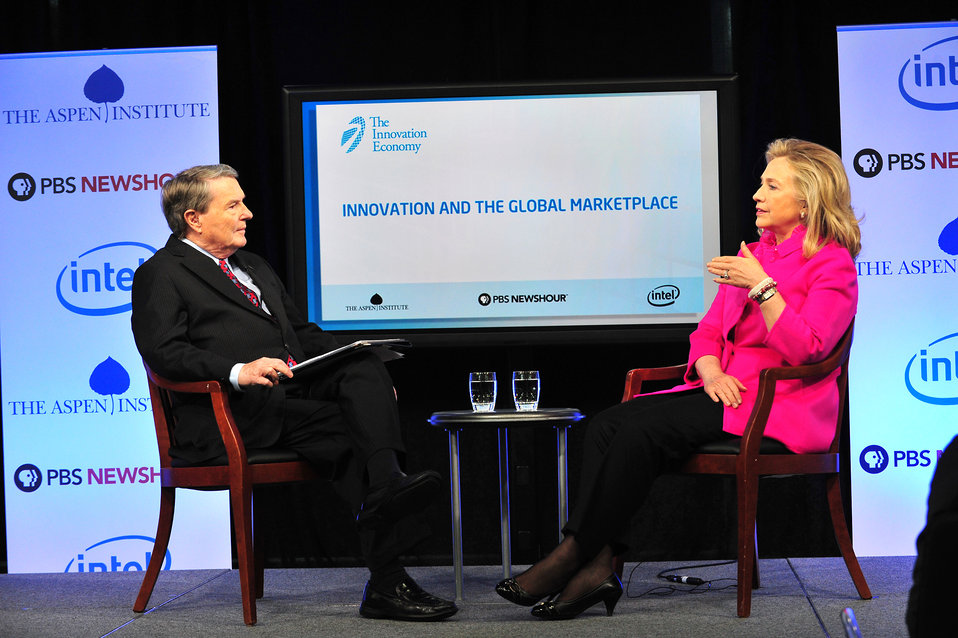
Secretary Clinton Joins Jim Lehrer in a Discussion

U.S. Secretary of State Hillary Rodham Clinton joins Jim Lehrer in a discussion at the Innovation and the Global Marketplace: A Discussion on American Innovation, Trade and the Next 10 Million Jobs event at the Newseum, in Washington, D.C., on December 14, 2011.